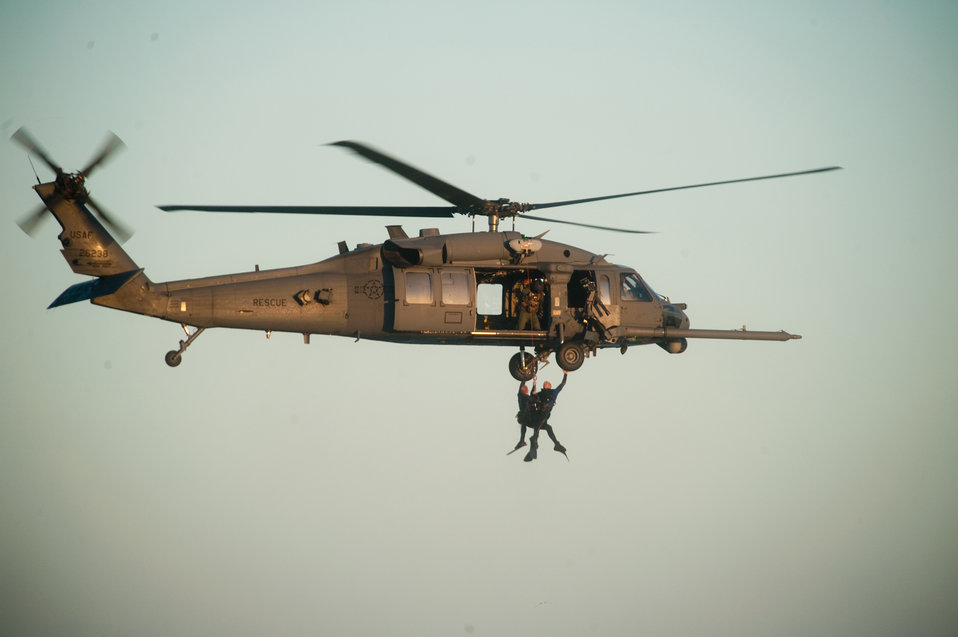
Pararescuemen demonstrate their skills during Air Force Week

Pararescuemen grab a tire before the final lift into HH-60 Pave Hawk during a rescue demonstration at Air Force Week Cocoa Beach in Florida, Oct. 27, 2010. The pararescuemen are from the Air Force Reserve Command?s 920th Rescue Wing at nearby Patrick Air Force Base.